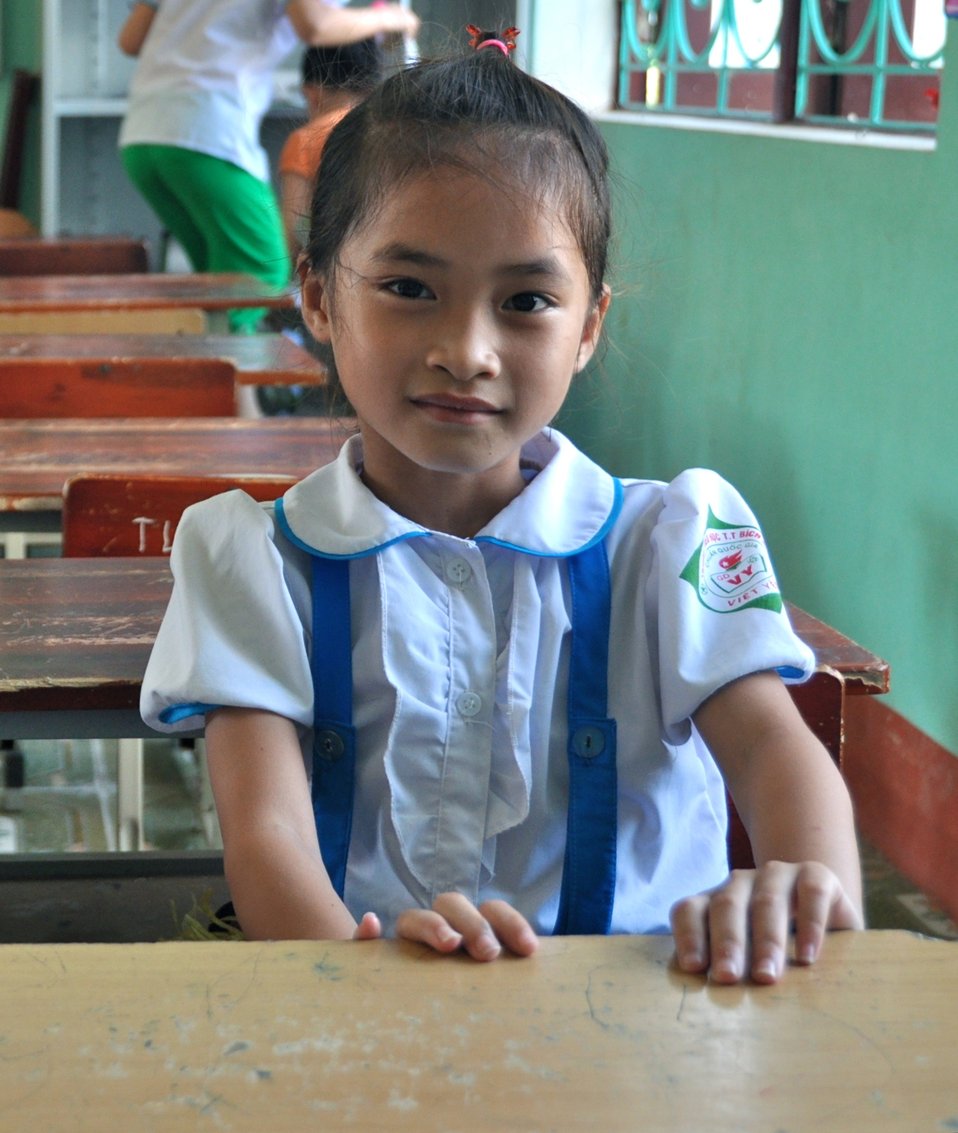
USAID supports deworming education and medication distribution in Bac Giang Province

May 20, 2013